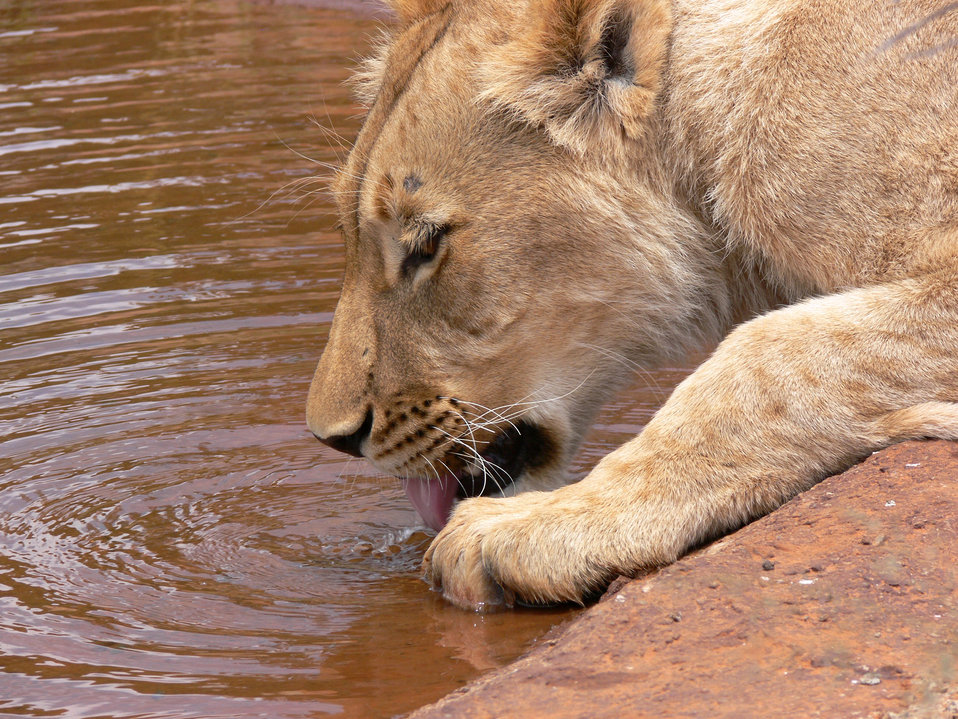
Lioness drinking from waterhole.